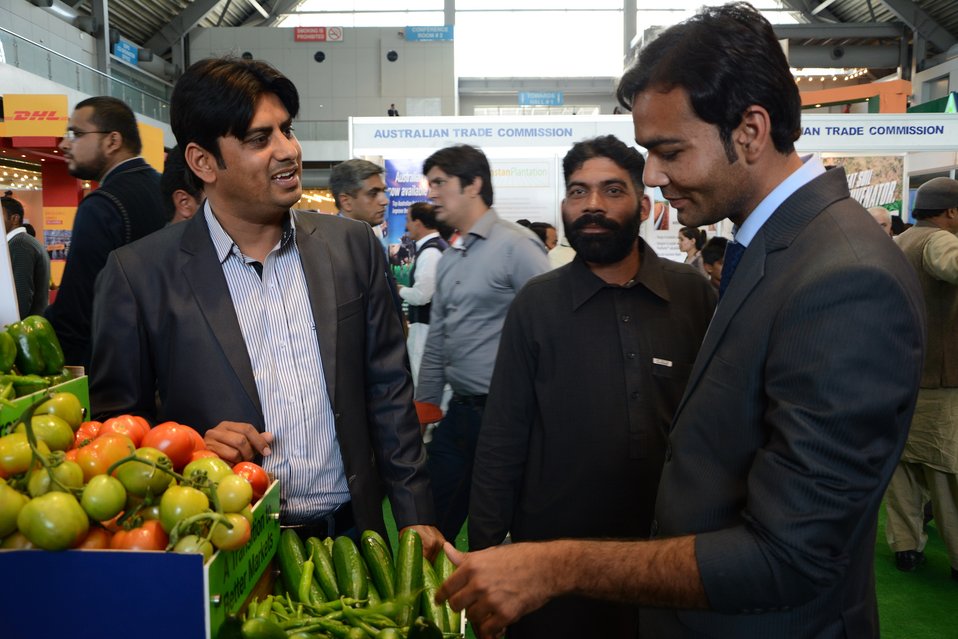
TAP5